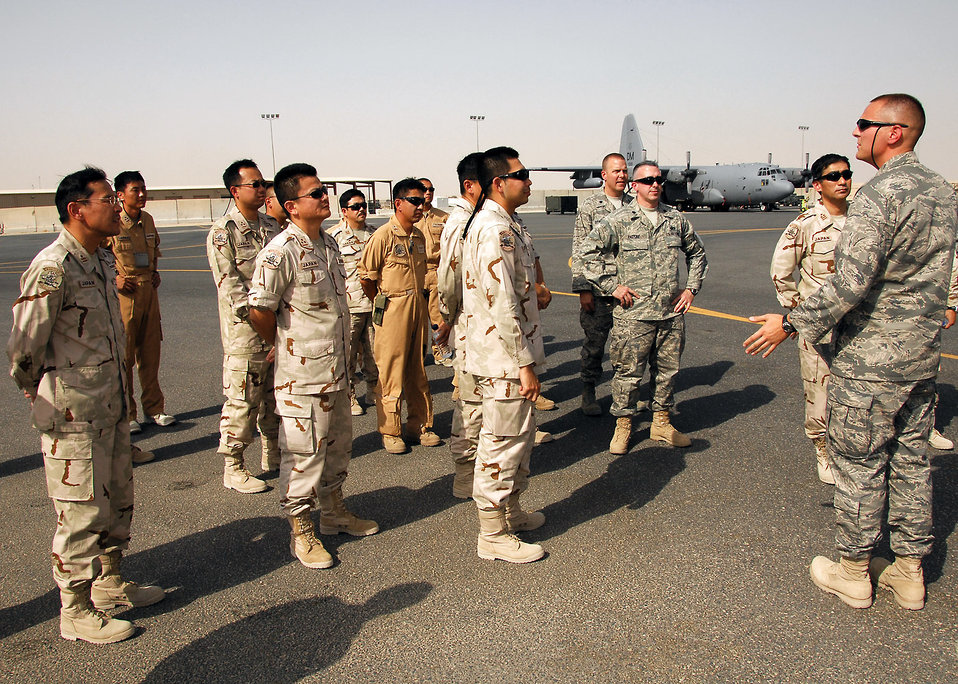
Maintenance coalition exchange tours enhance vital partnership

1st Lt. David Marques briefs Japan Air Self-Defense Force members on the capabilities of a EC-130H Compass Call at a base in Southwest Asia. The brief was part a coalition maintenance exchange program between the U.S. Air Force, JASDF and the Republic of Korea air force, which promotes an exchange of aircraft maintenance ideas and practices between them. Lieutenant Marques is the 386th Silver Aircraft Maintenance Unit officer in charge.